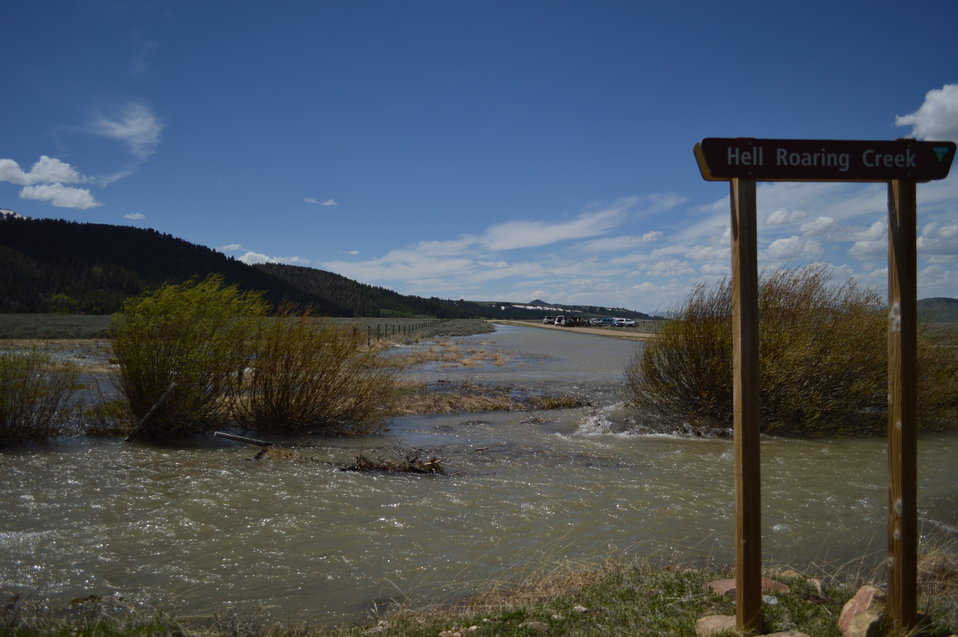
Regional Leadership Visit to Montana 2014